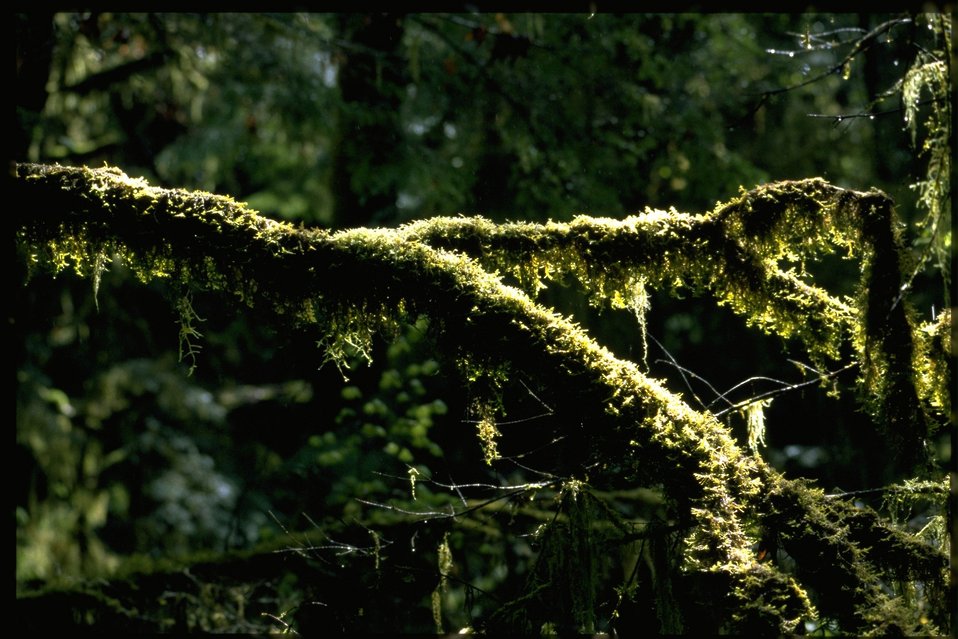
Farshot of Bryophytic epiphytes.